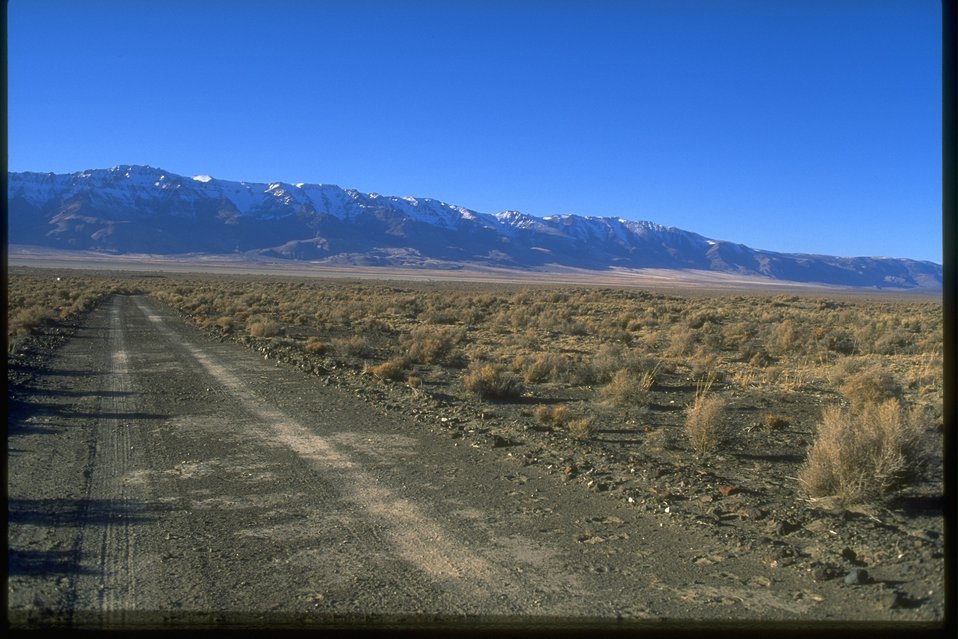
Road leading up to Steens Mountain.